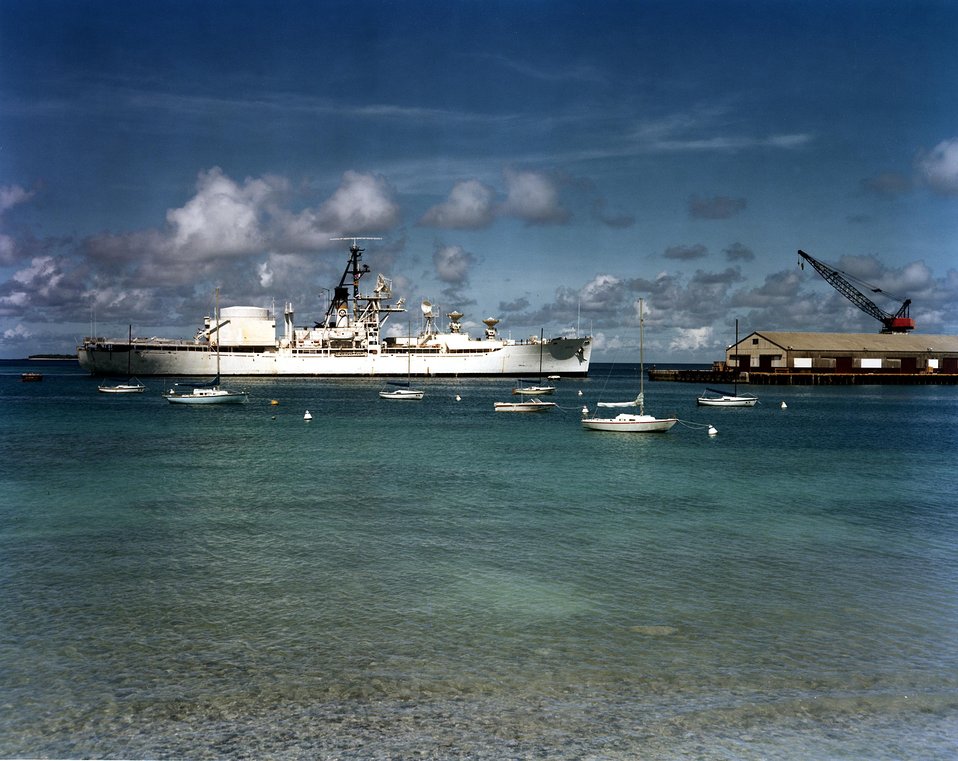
Millstone Nuclear Power Station Unit 1.